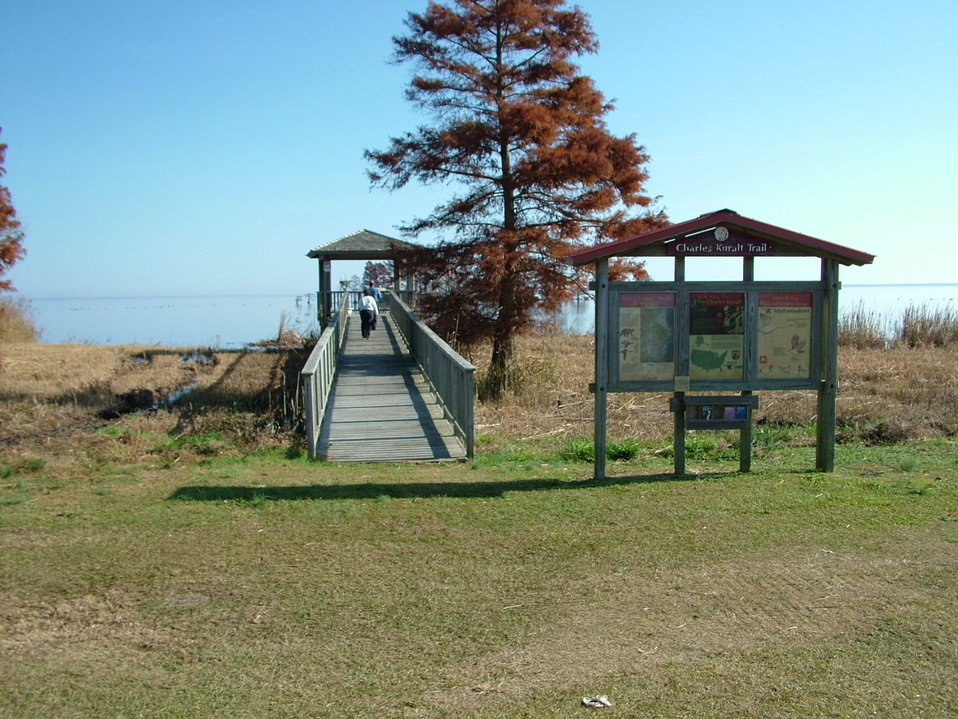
Overlook at the Charles Kuralt Trail